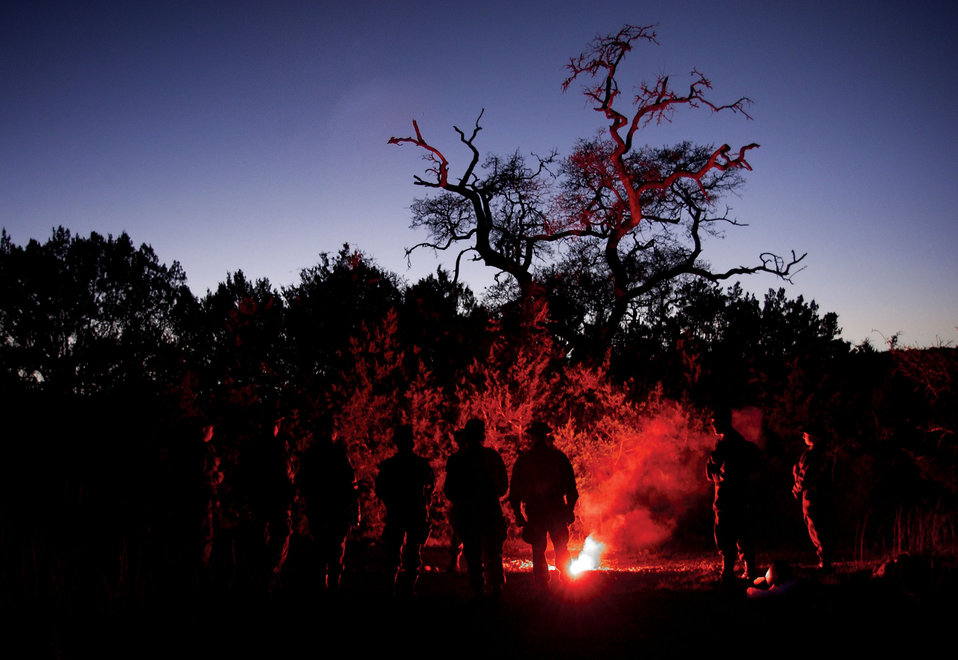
Night falls

CANYON LAKE, Texas -- Aeromedical students set off rescue flares as part of their medical Survival, Evasion, Resistance and Escape (SERE) training. While here the students spend five days in the field where they learn basic survival techniques such as land navigation, shelter building, aircraft signaling and foraging for food.